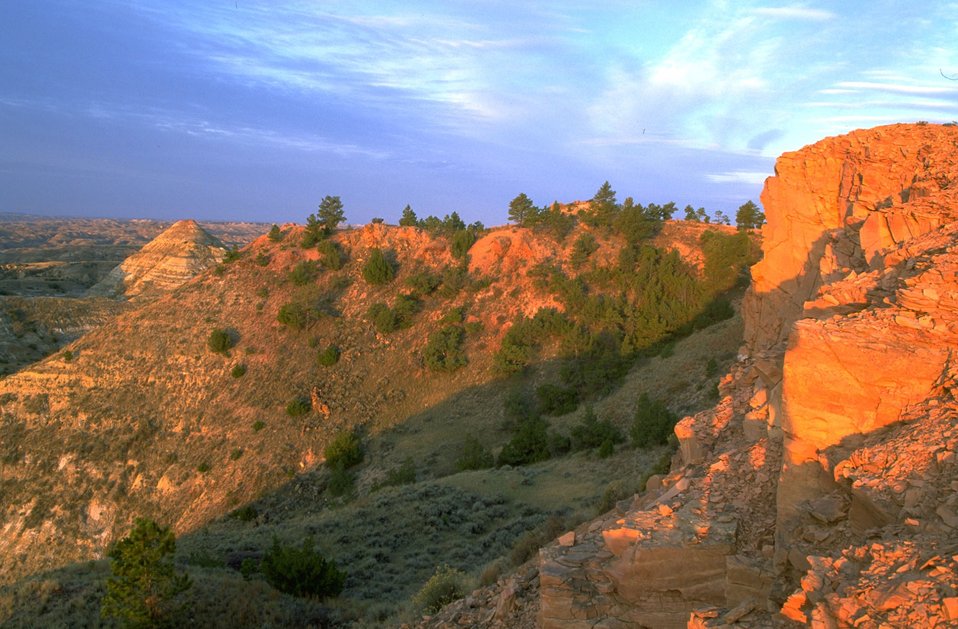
Golden cliffs in the Terry Badlands